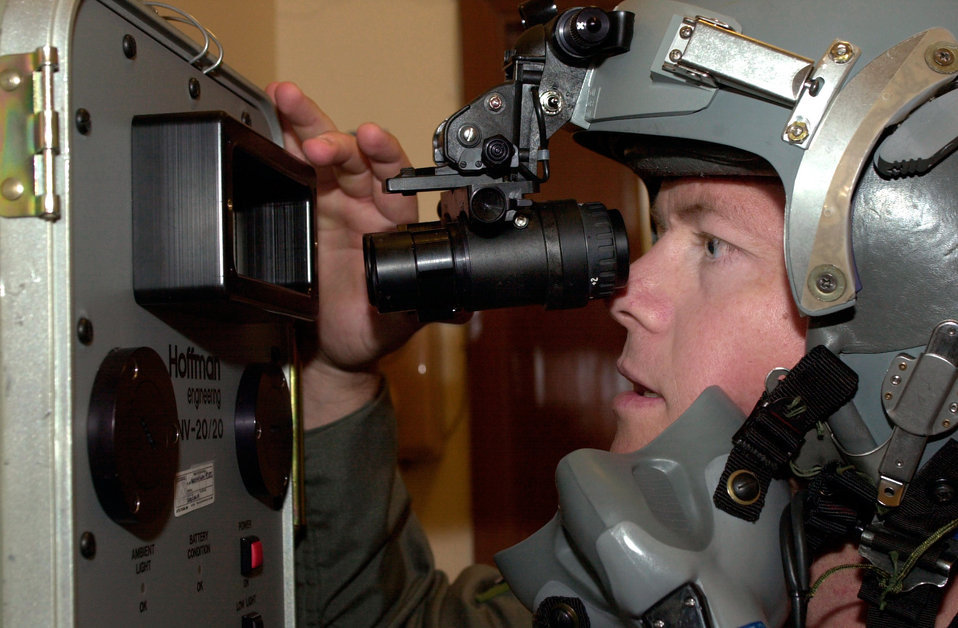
Nightvision

OPERATION IRAQI FREEDOM -- Capt. Steven, a B-52 Stratofortress pilot from Minot Air Force Base, N.D., checks his night vision equipment at a forward deployed Operation Iraqi Freedom locatin. He is deployed to the 457th Air Expeditionary Group.